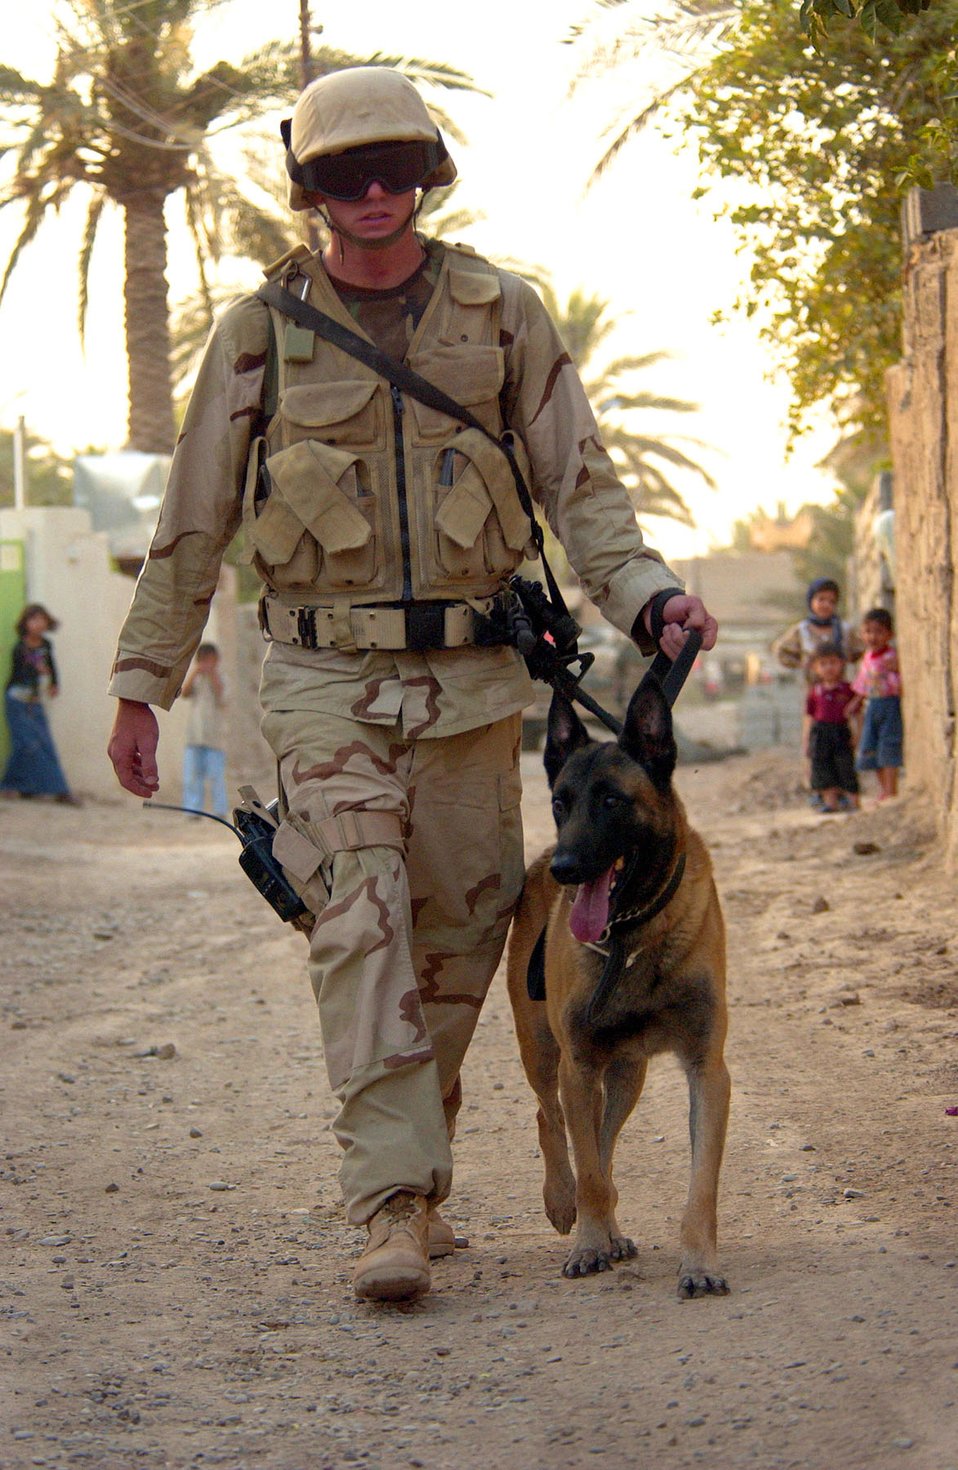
Suspected devices and weapons

IRAQ -- Staff Sgt. James Richey Jr. walks Jacco toward a house with suspected hidden improvised explosive devices. Sergeant Richey is deployed from the 96th Security Forces Squadron at Eglin Air Force Base, Fla.